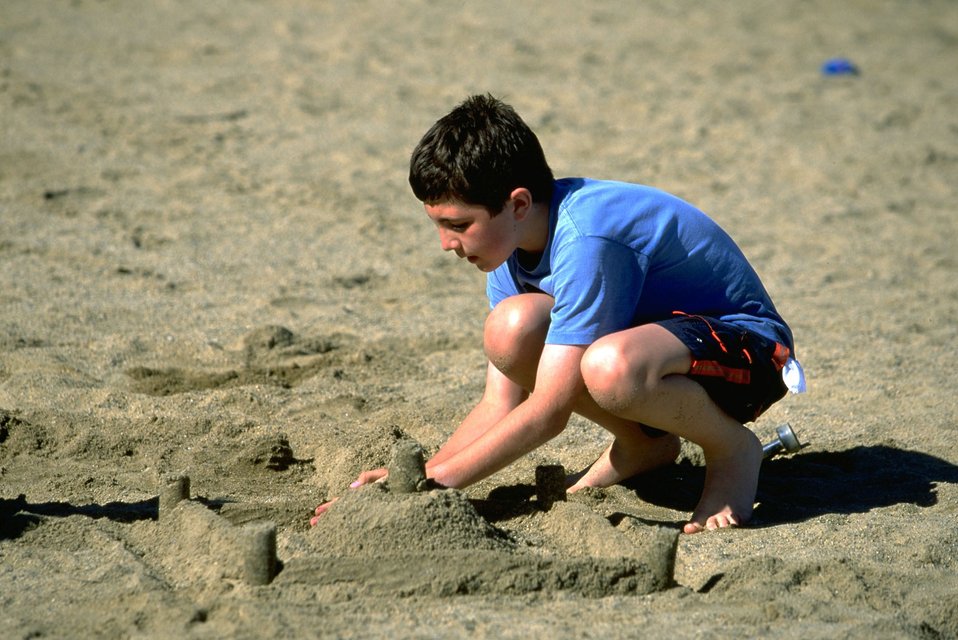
Boy building sand castles in the sand on the beach of Hauser Lake